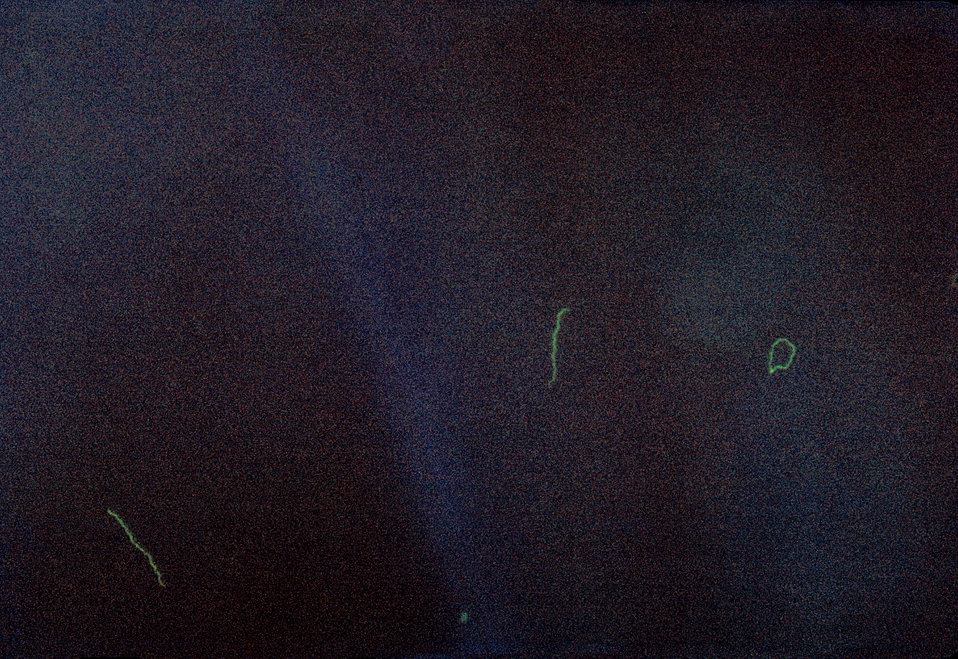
A photomicrograph of Treponema pallidum bacteria using DFA stain for FTA antigen.